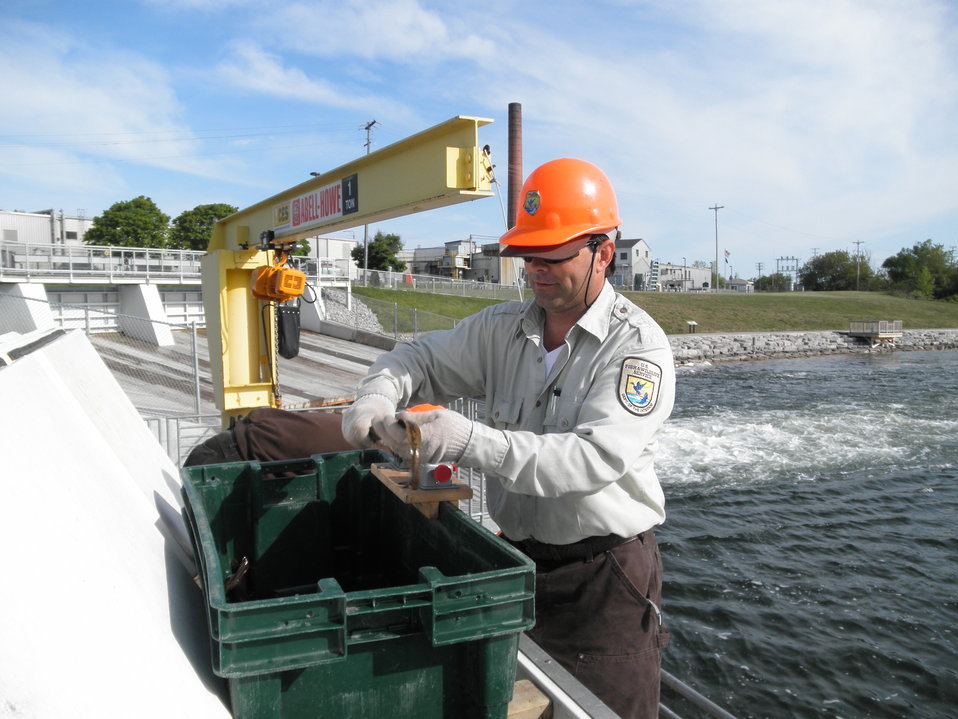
Service Employee Sexing a Sea Lamprey at the Cheboygan River in Michigan.